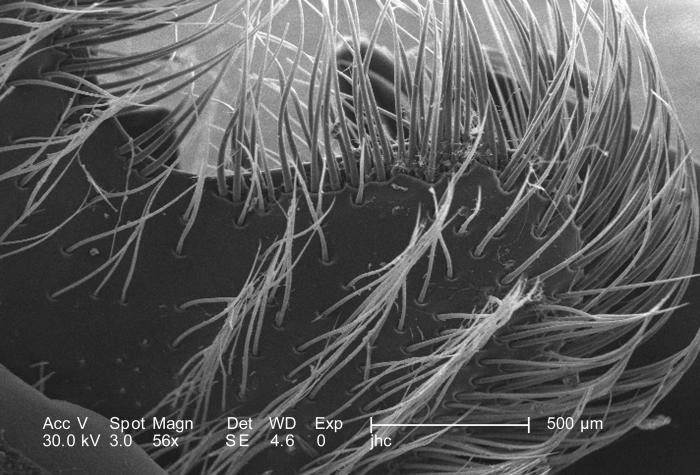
Under a low magnification of 56X, this scanning electron micrograph (SEM) depicted some of the exoskeletal morphologic characteristics displayed on the head region of an unidentified beetle found deceased in the suburbs of Decatur, Georgia. In this particular view, there seems to be numerous 'hairs' growing up, out of the organism's exoskeletal surface. These structures are sensorial in nature, and are known as 'setae', providing the insect with information about its environment including thermal changes, changes in wind direction, and the presence of chemicals such as poisons or pheromones. These setae are not composed of keratin, as in the case of mammals, but like the exoskeleton itself, are composed of chitin.